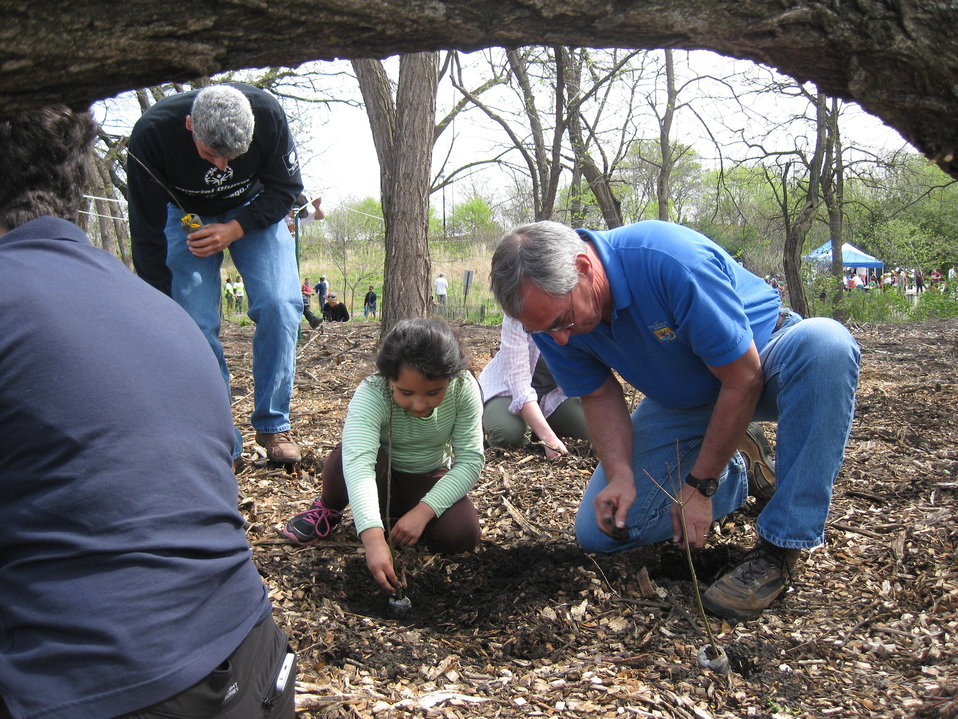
R3 RD Tom Melius helps plant seedlings

Chicago Park District Burnham Corridor Community Planting Day
May 10, 2014
Photo by USFWS; Louise Clemency